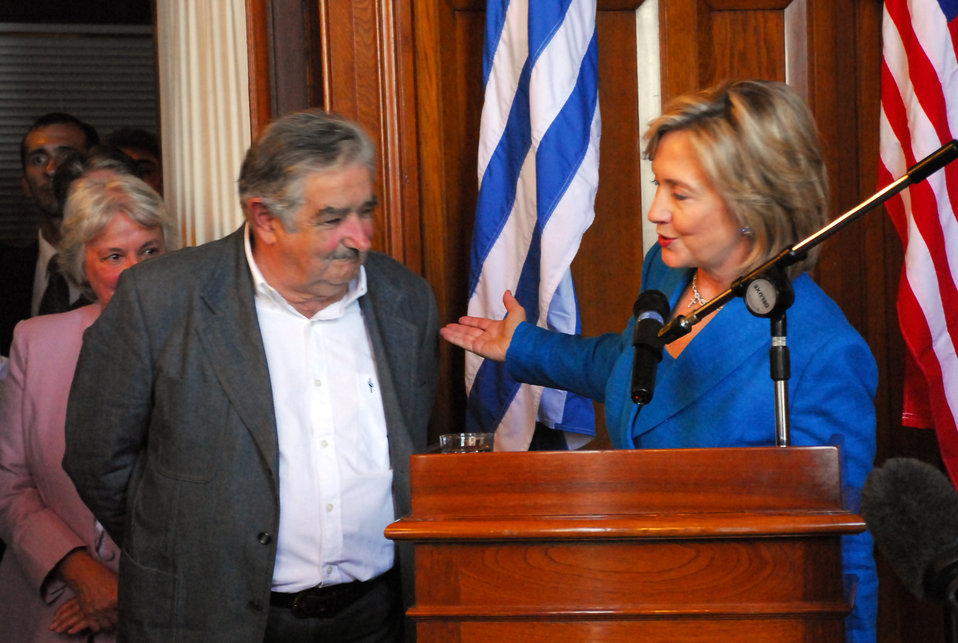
Secretary Clinton Delivers Statement

U.S. Secretary of State Hillary Rodham Clinton delivers a statement after meeting with President Elect of Uruguay José Mujica at the Legislative Palace in Montevideo, Uruguay March 1, 2010.